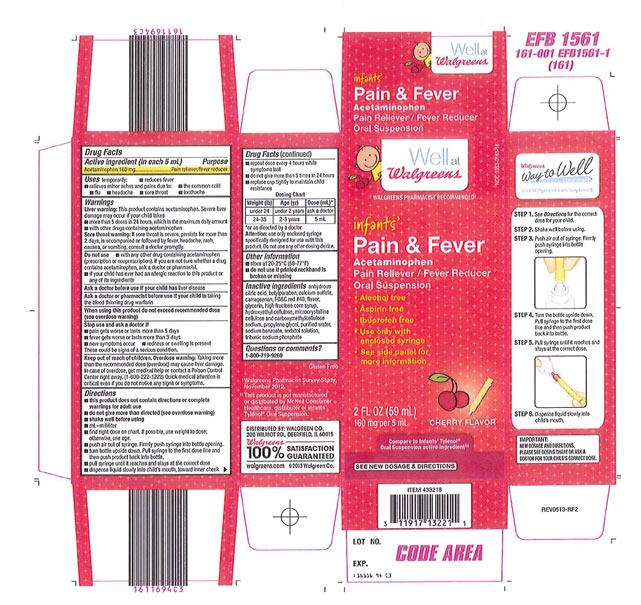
Recalled - Acetaminophen infant suspension liquid

November 1, 2013 – Product Recall – Perrigo Initiates Nationwide Voluntary Product Recall of Acetaminophen Infant Suspension Liquid, 160 Mg/5 Ml, Due to a Potential Defect with the Co-packaged Oral Syringe.